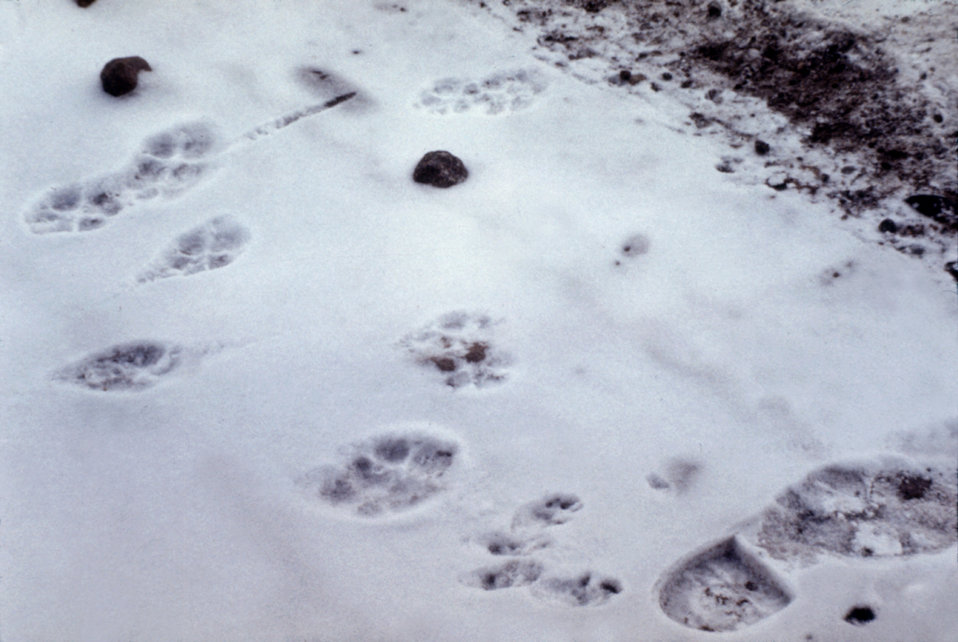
These coyote, Canis latrans, and cottontail rabbit, Sylvilagus nuttallii tracks were found in Estes Park, Co.